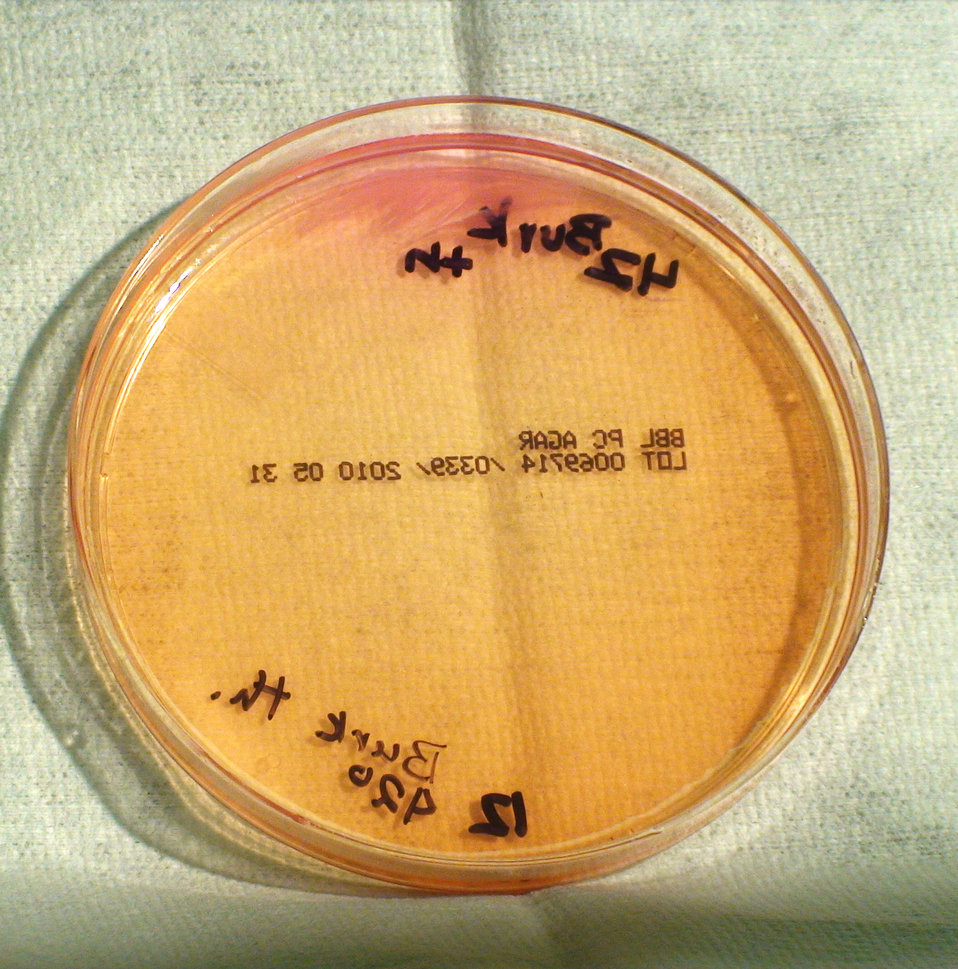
This photograph depicts the colonial morphology displayed by Gram-negative Burkholderia thailandensis bacteria, which was grown on a medium of Pseudomonas cepacia (PC) agar, for a 24 hour time period, at a temperature of 42�C. See PHIL 12430, for a closer view of these bacterial colonies. Note PHIL 12407 shows the same bacterial specie, grown on the same medium, but at a lesser temperature (37�C), and for twice the time (48hr). PHIL 12416 depicts B. thailandensis bacteria grown on the same medium, at the same temperature (42hr), but for twice the time, and PHIL 12421 and 12422, both grown for the same time (24hr), but at a lesser temperature (37�C).